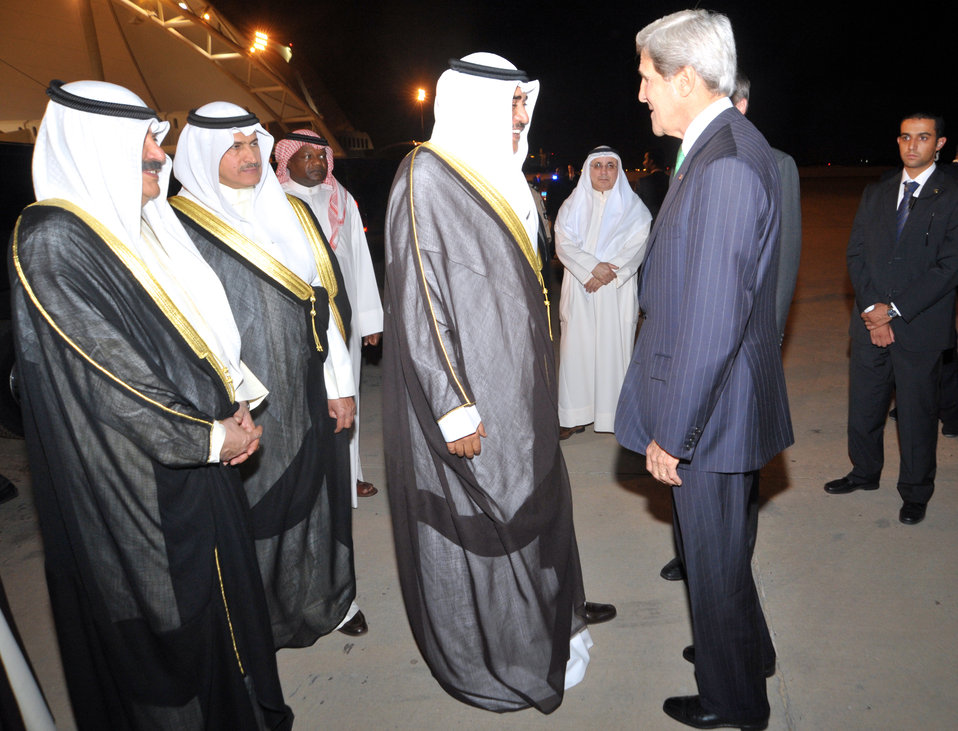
Secretary Kerry Is Greeted by Sheikh Sabah Khalid Al-Hamad Al-Sabah

U.S. Secretary of State John Kerry is greeted by Sheikh Sabah Khalid Al-Hamad Al-Sabah, Kuwaiti Deputy Prime Minister and Minister of Foreign Affairs, upon his arrival in Kuwait City, Kuwait, on June 25, 2013.